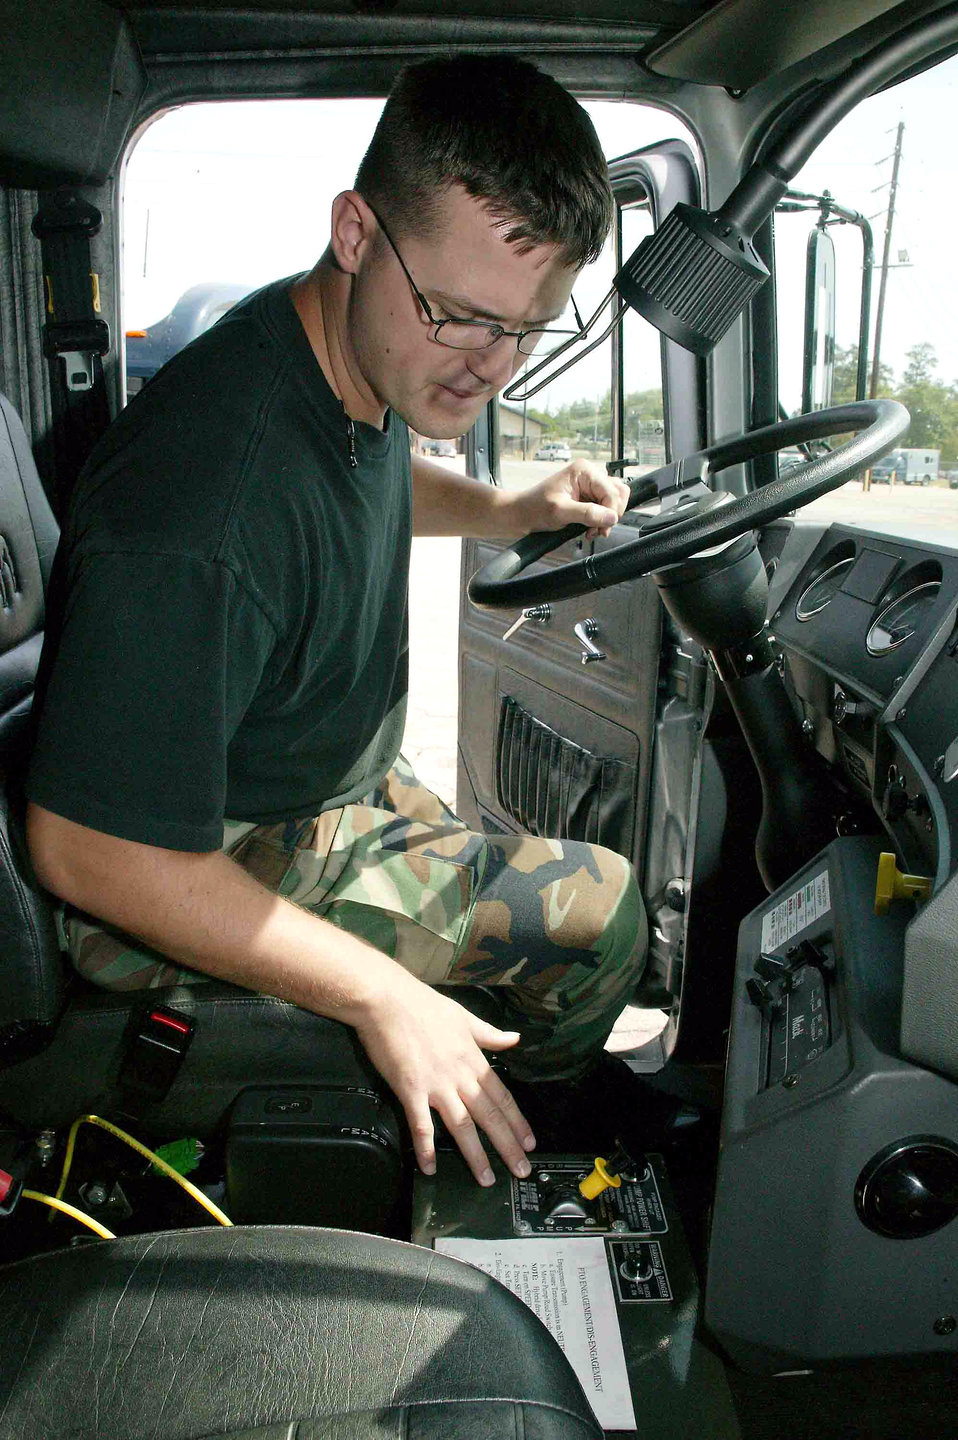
Shaw to begin one-year hybrid refueler test

Staff Sgt. Stephen Zuelke inspects the interior electrical equipment of an R-11 hybrid refueling truck April 25 at Shaw Air Force Base, S.C. The environmentally-friendly hybrid is the only one of its kind in the Air Force. The 72,000-pound hybrid is undergoing a one-year test at Shaw to see how much money it saves on fuel, maintenance and other cost measurements. Sergeant Zuelke is a vehicle technician with the 20th Logistics Readiness Squadron.